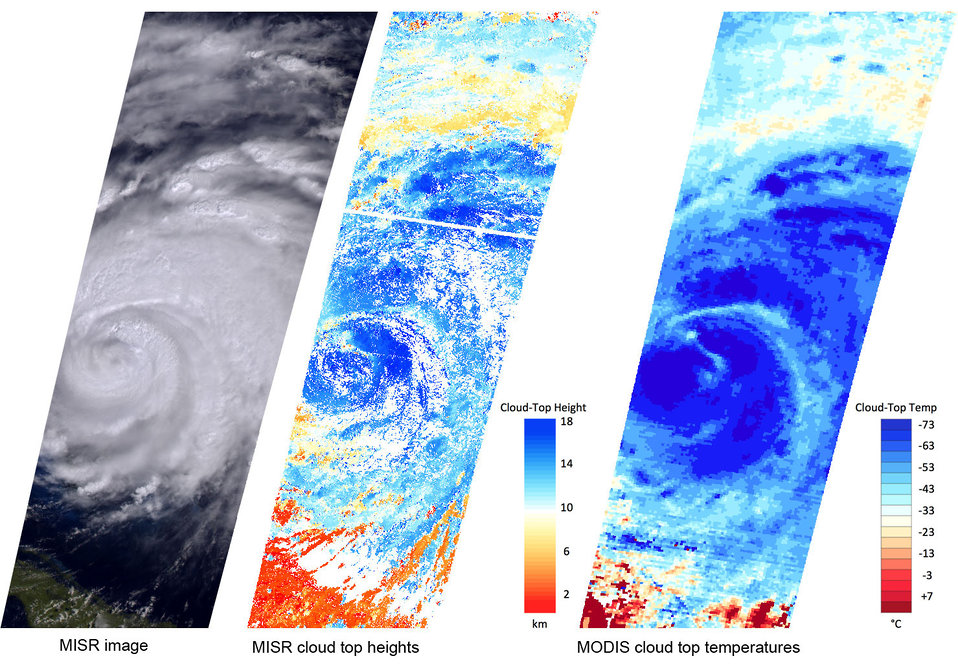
National Aeronautics and Space Administration, (NASA): Hurricanes/Tropical Cyclones